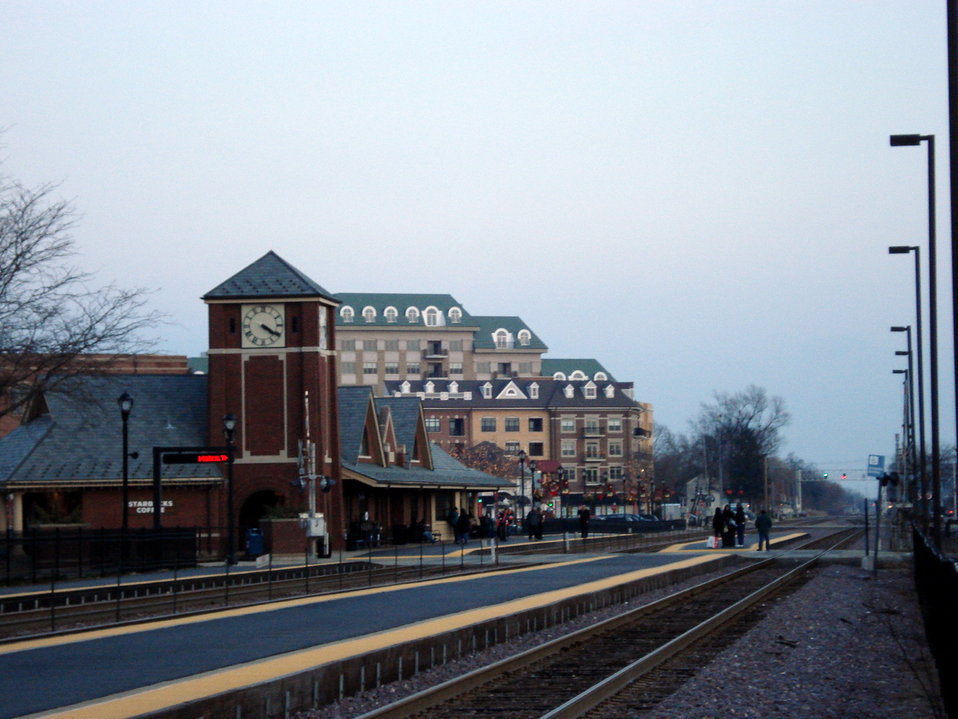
Palatine Metra Station from west of Smith Street looking east. Photographed by Sebastian Sierotnik